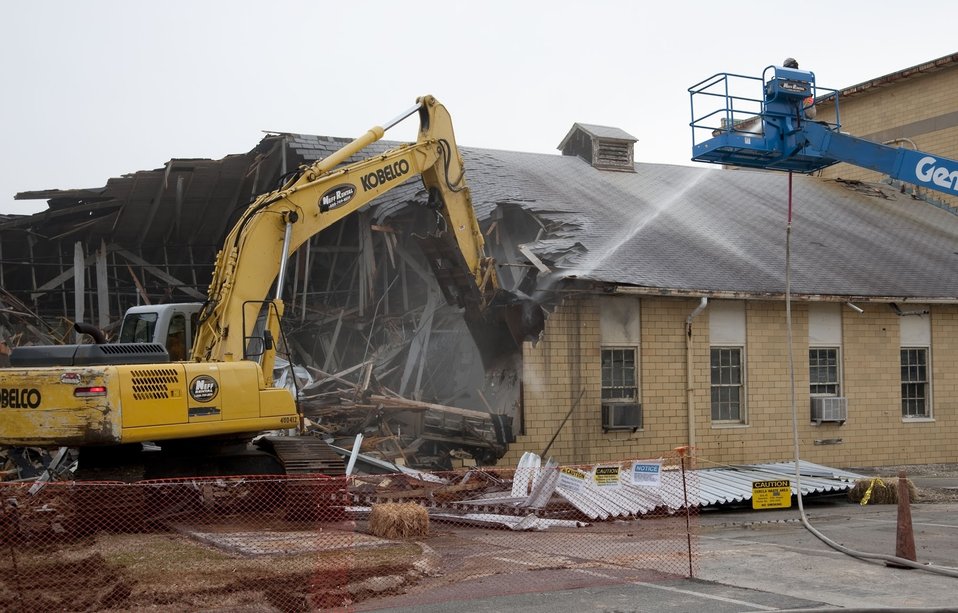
Oak Ridge Y-12 Demolition

Workers demolish a building on Y-12 National Security Complex’s Engineering Row.